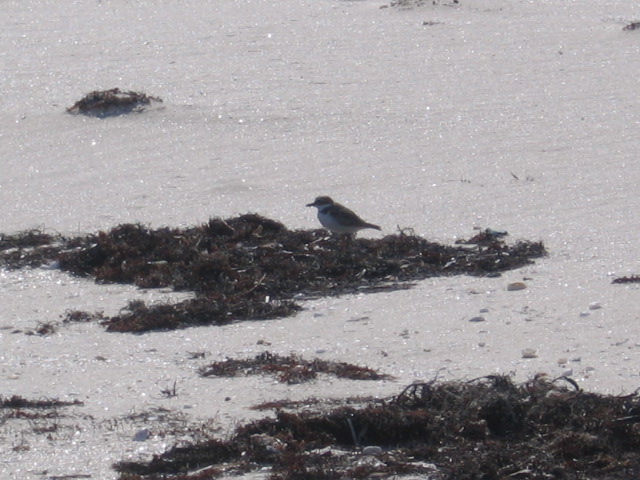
Wilson’s Plover